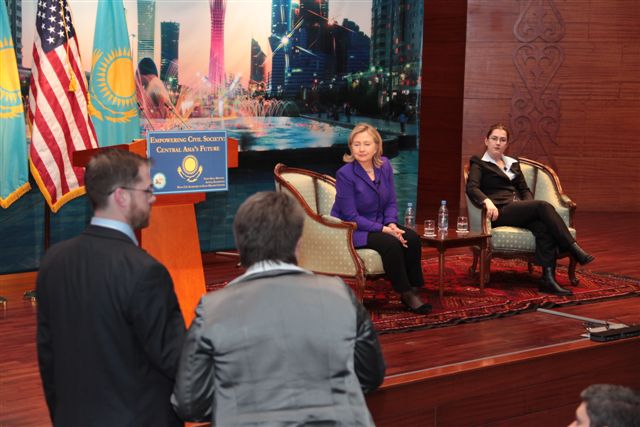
Secretary Clinton Participates in a Town Hall

U.S. Secretary of State Hillary Rodham Clinton participates in a Town Hall on Empowering Civil Society for Central Asia's Future at Eurasian University in Astana, Kazakhstan, on November 30, 2010.